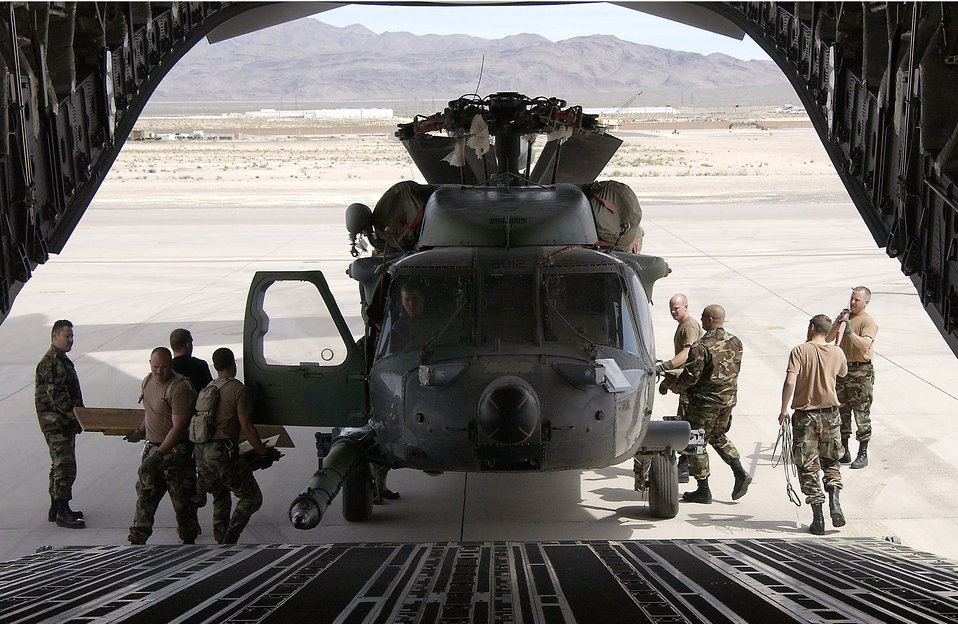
Pavehawk returns

OPERATION IRAQI FREEDOM -- Maintenance troops from the 57th Aircraft Maintenance Squadron Nellis Air Force Base, Nevada unload a HH-60G Pave Hawk from the C-17 Globemaster III. The helicopter was brought back from an undisclosed location in support of Operation Iraqi Freedom.